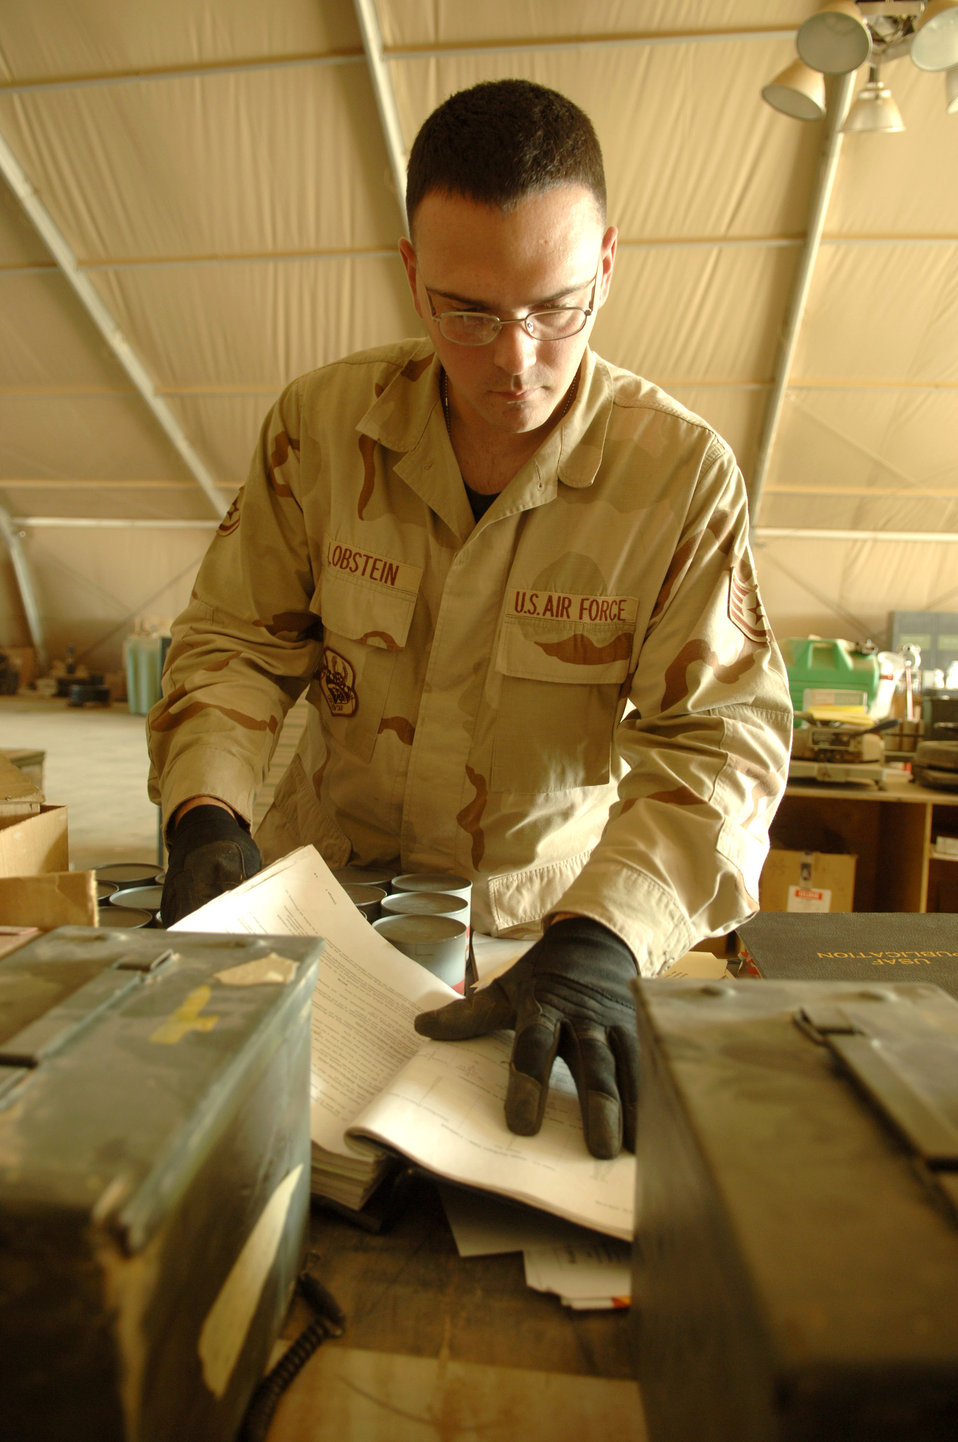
Putting steel on target

Staff Sgt. Kevin Lobstein references his inspection guide during his periodic ammunition inspection of riot control grenades Nov. 29 at Balad Air Base, Iraq. Sergeant Lobstein is assigned to the 33nd Expeditionary Maintenance Squadron Ammunition Flight and is deployed out of Cannon Air Force Base, N.M.